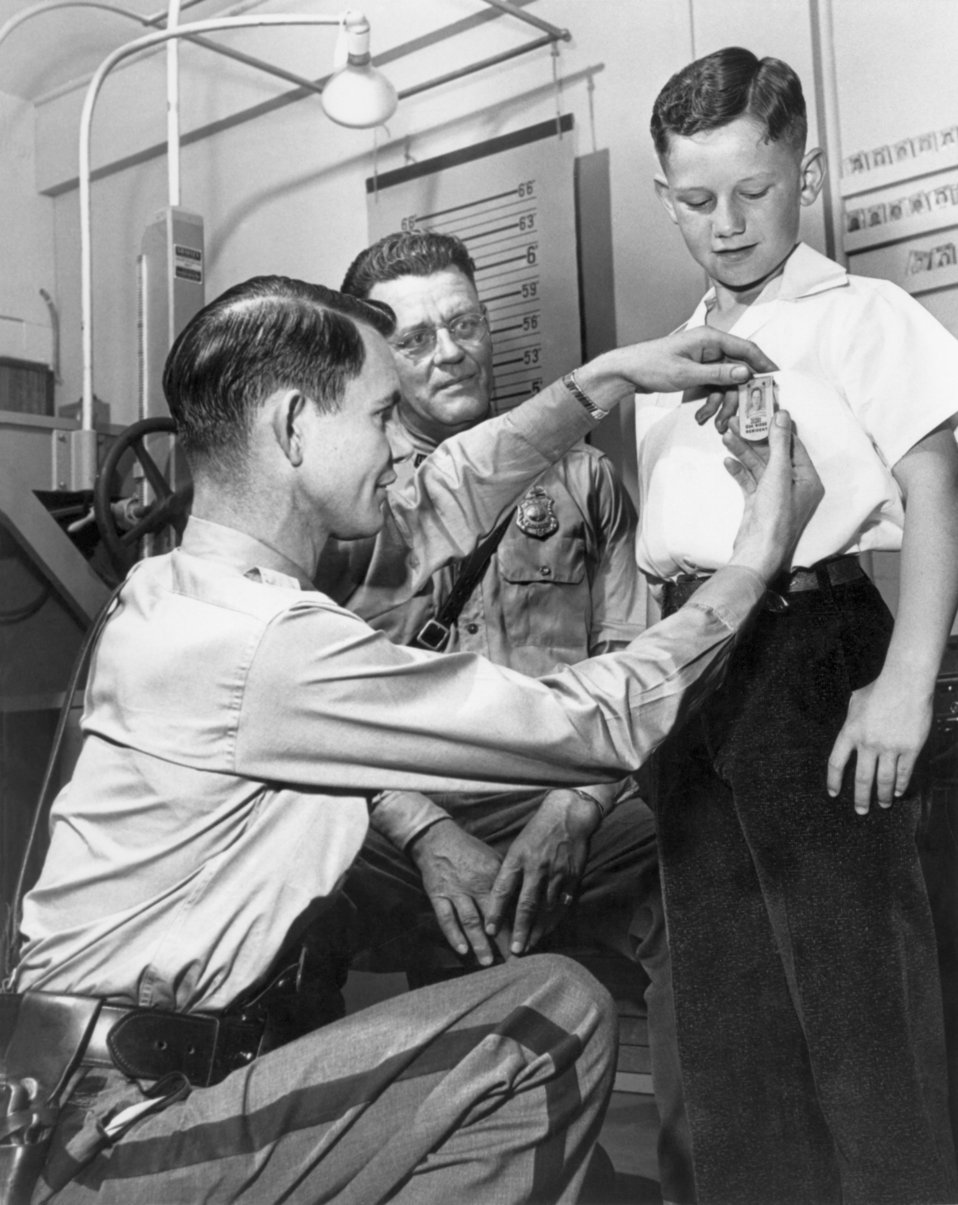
Security Badge with Little Boy - Oak Ridge

94-40 DOE photo by Ed Westcott

Security Badge with Little Boy - Oak Ridge Tennessee 1944